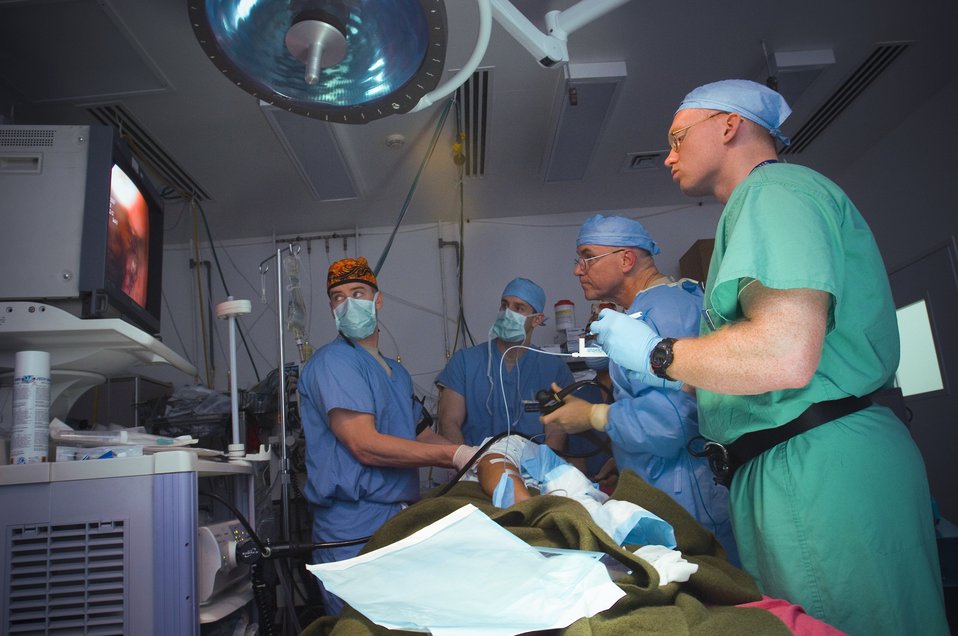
Combat Nurse anesthetist

Capt. Charlie Johnson (left) holds a patient in place during an endoscopy procedure Dec. 29 at the Air Force Theater Hospital at Balad Air Base, Iraq. Captain Johnson earned his certified registered nurse anesthetist certification while serving as an Air Force nurse. Captain Johnson is deployed from Travis Air Force Base, Calif.